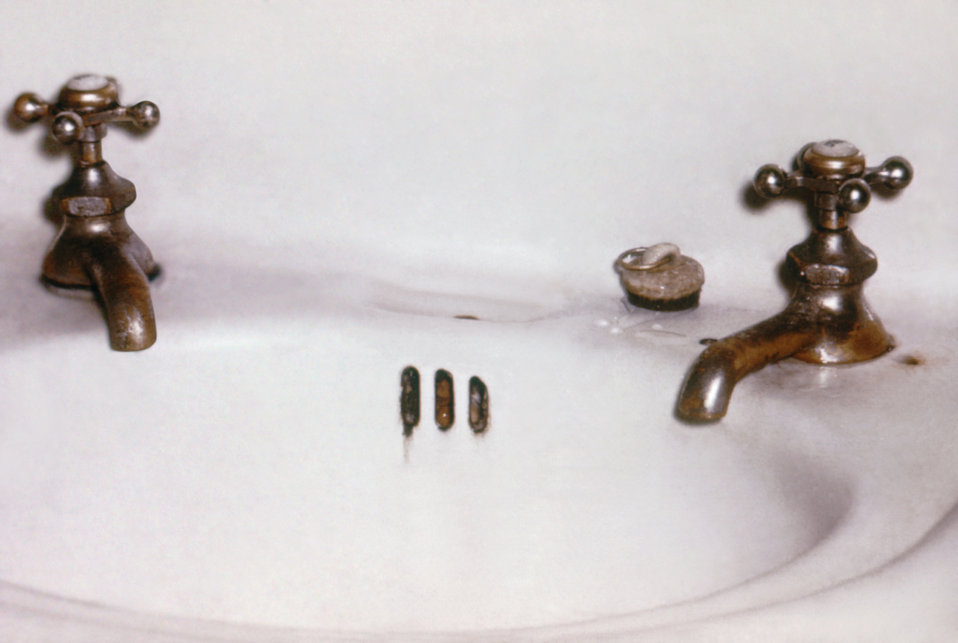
This image shows lavatory faucet openings located below the water spill rim, which makes back-siphonage of dirty water possible.